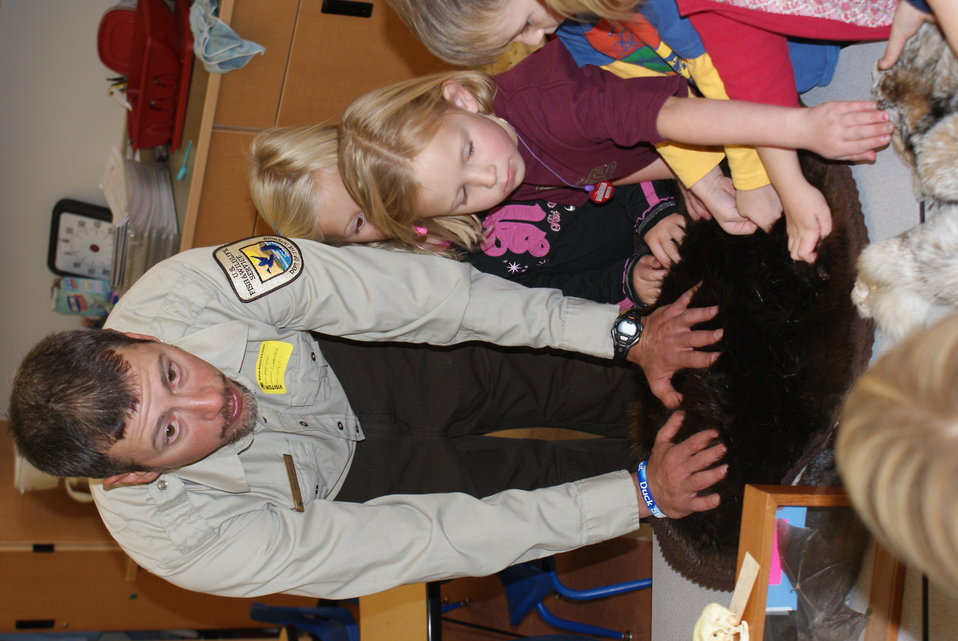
Scientists in the Community Program

U.S. Fish and Wildlife Service Mountain-Prairie Region Deputy ARD for External Affairs, Matt Kales, introduces early childhood education students at William Roberts Elementary School in Denver to some of Colorado's native and historic wildlife species.